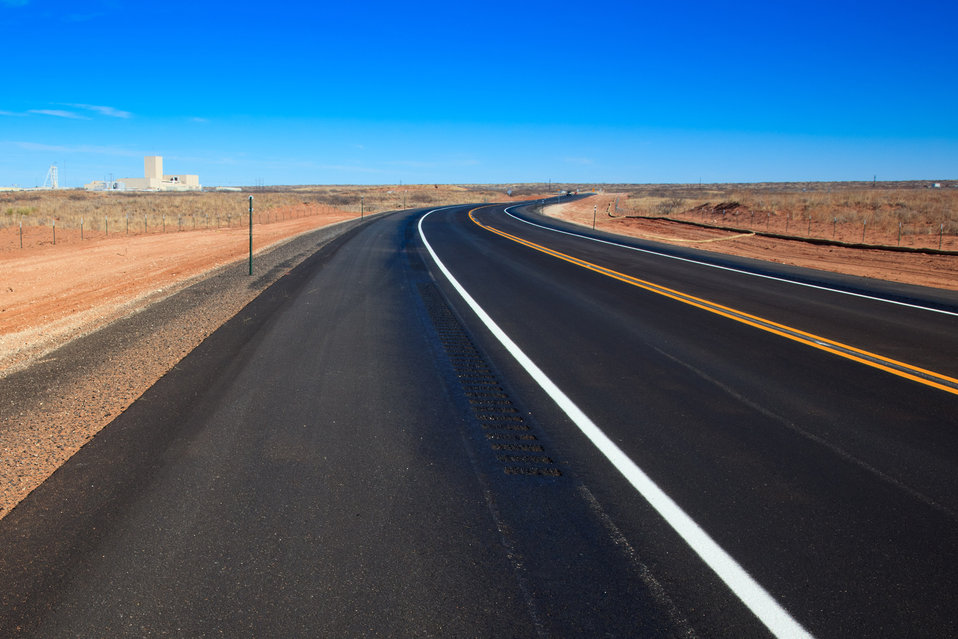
Recovery Act Accelerates Transuranic Waste Disposal Across DOE Complex

South Access Road (after)
•The newly reconstructed WIPP South Access Road. The road, which reopened to traffic in January 2011, now features wider driving lanes and shoulders. WIPP has requested use of the road to accommodate shipments of transuranic waste to WIPP for safe, permanent disposal. The new route would allow shipments entering New Mexico from the southern U.S. to travel a shorter distance to WIPP. For example, shipments from the Savan¬nah River Site in South Carolina would travel 188 less miles using the new route, resulting in savings of about $1,080 per trip.